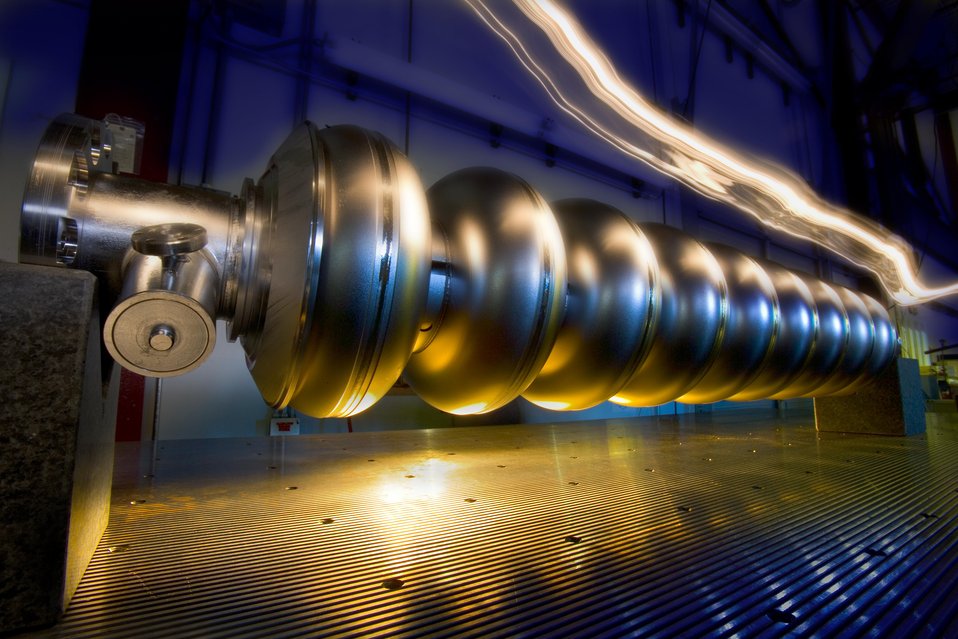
SUPERCONDUCTING RF CAVITY AT FERMI NATIONAL ACCELERATOR LABORATORY.